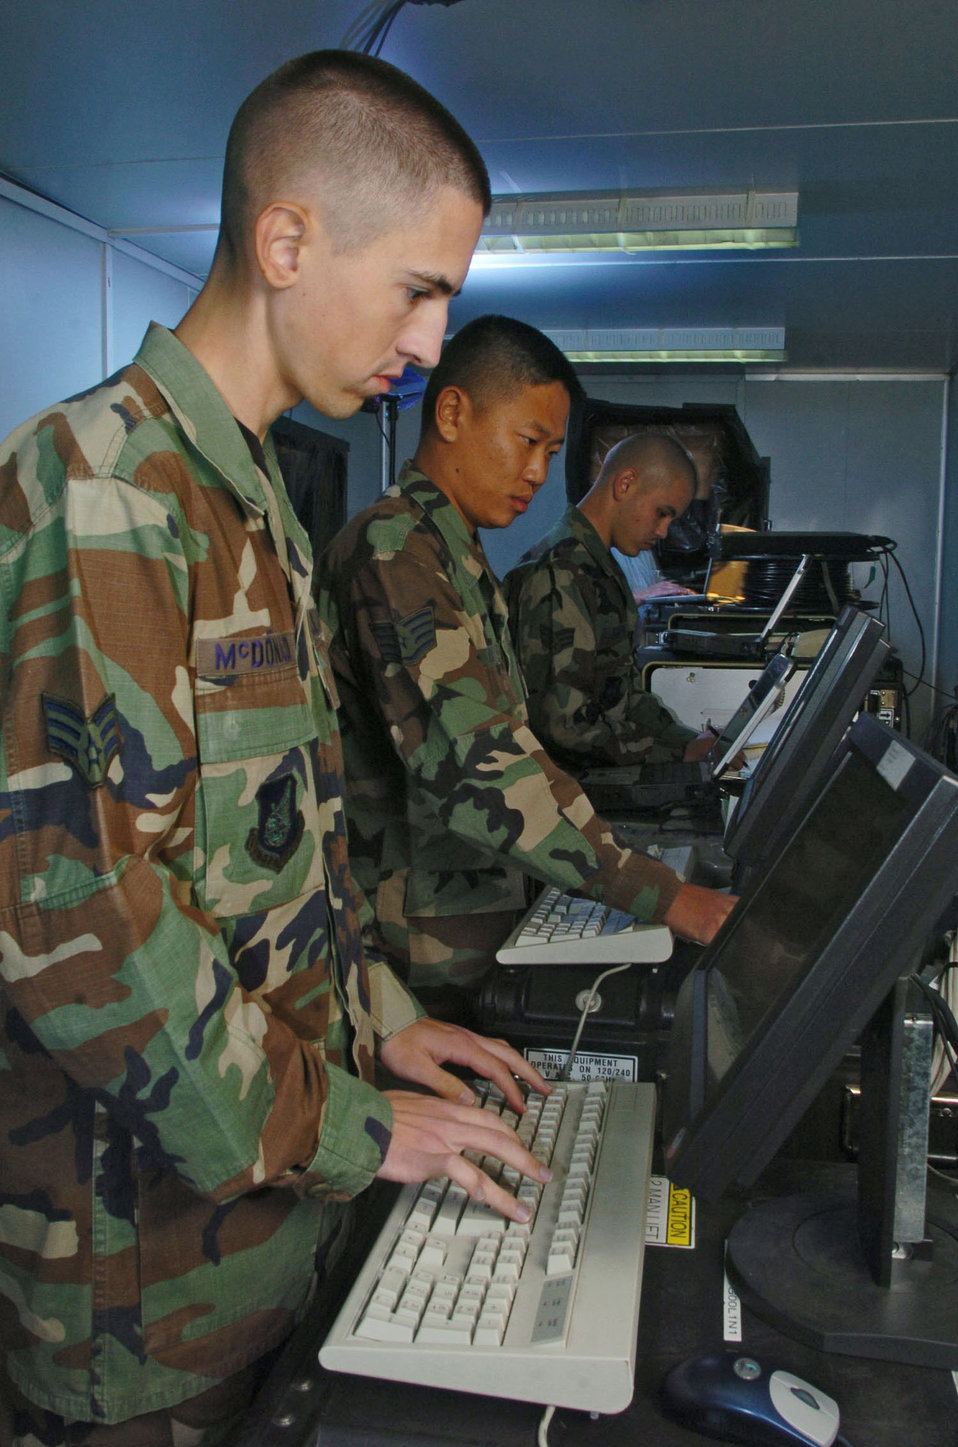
Kadena Airmen ensure link to the world

UTAPAO, Thailand -- (From left) Senior Airman Shawn McDonald, Staff Sgt. James Kim and Senior Airman Gilbert Carter -- set up their network system during tsunami relief operations here. The Airmen are deployed from the 18th Communications Squadron at Kadena Air Base, Japan. They provide communications support, such as telephones and Internet service, to deployed troops here.